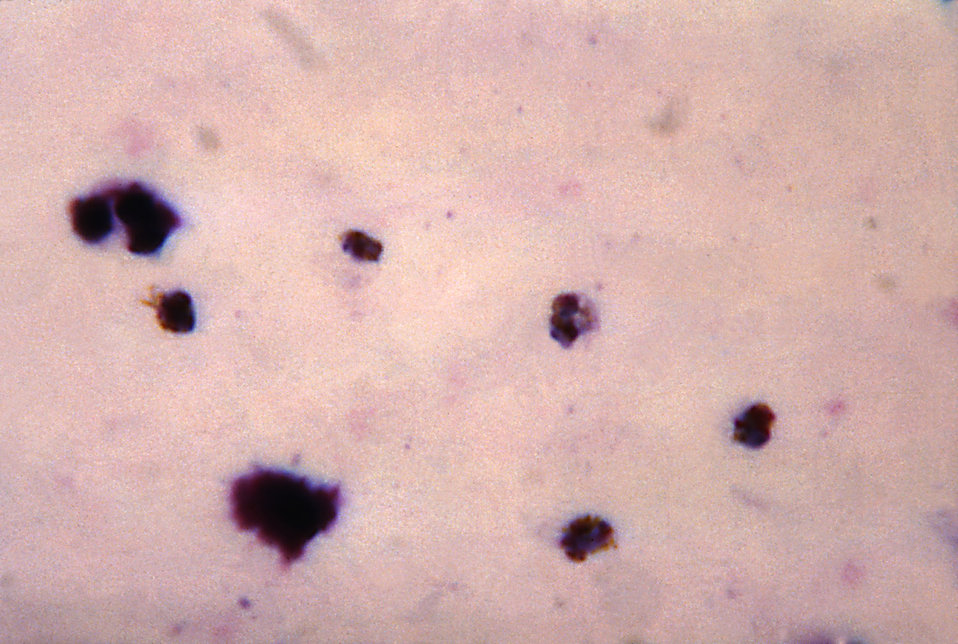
This thick film micrograph reveals five old, growing Plasmodium malariae trophozoites.